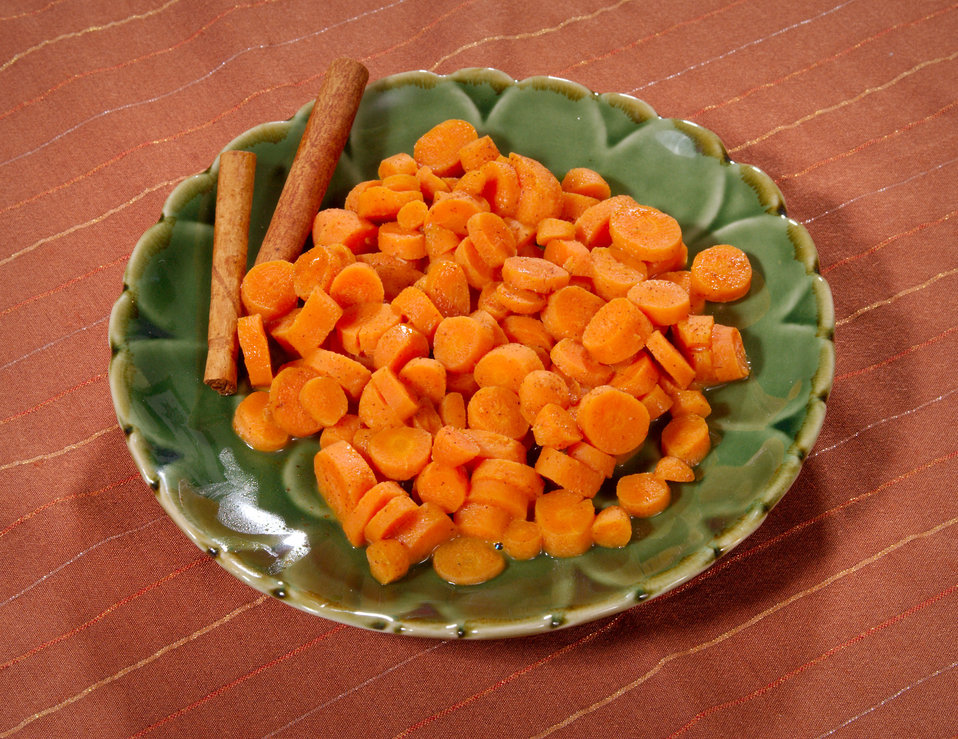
Depicted in this image is a simple dish called Glazed Carrots. The recipe for this dish may be viewed through the link below, and calls for carrots, orange juice, cinnamon, cayenne pepper, butter, canola oil, and salt. Loaded with vitamin A, and a good source of fiber, this food is also low in saturated fats, cholesterol, and sodium.